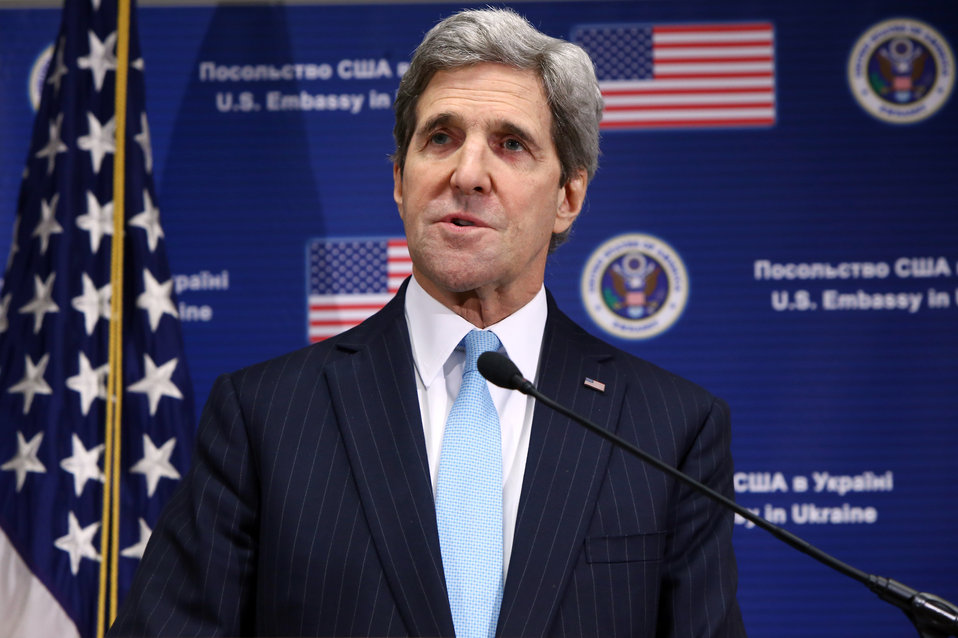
Secretary Kerry Addresses Reporters in Kyiv, Ukraine

U.S. Secretary of State John Kerry addresses reporters at the U.S. Embassy in Kyiv, Ukraine, on March 4, 2014.